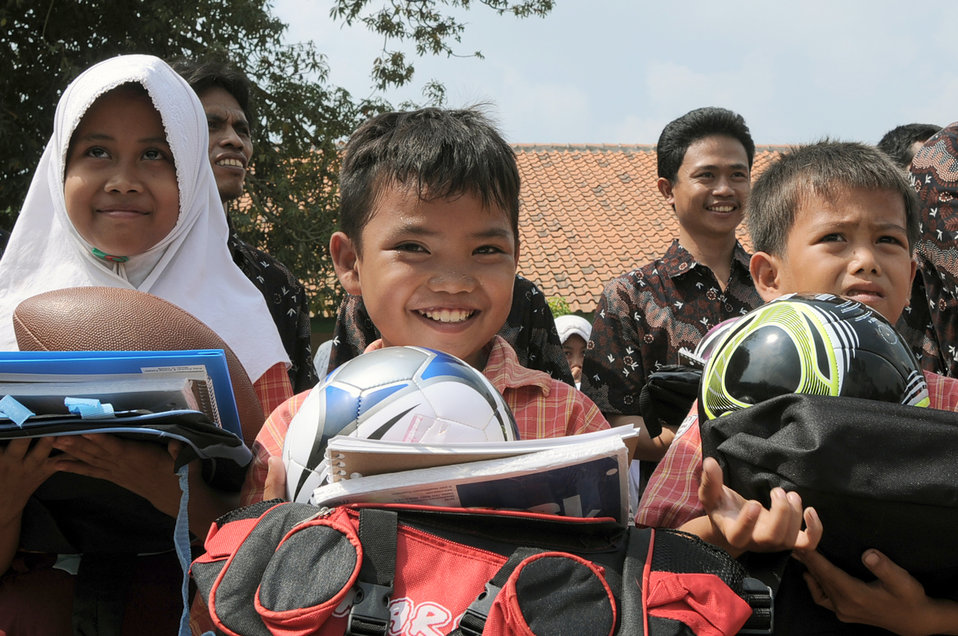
Yokota Airmen deliver school supplies to Indonesian school

Indonesian schoolchildren receive school supplies and sports equipment from Airmen during a goodwill visit to an elementary school in Binguang district, Indonesia, as part of Cope West 11.